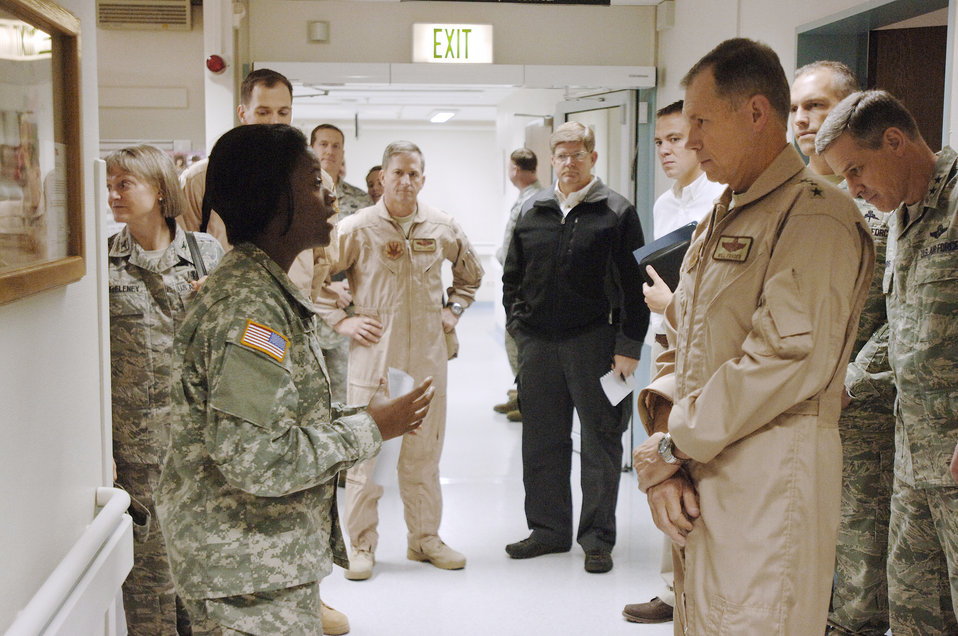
Air Combat Command leaders visit wounded warriors in Landstuhl Regional Medical Center

Gen. William M. Fraser III, visits Landstuhl Regional Medical Center, Nov. 20, 2009, where he is briefed by Army Capt. Ebony Peterman, who led a tour through the hospital's surgical ward to visit wounded U.S. and coalition service members. Since 2004, the hospital has treated more than 58,000 wounded U.S. and coalition servicemembers and civilians injured in Iraq and Afghanistan. General Fraser is the commander of Air Combat Command and Captain Peterman is a charge nurse.